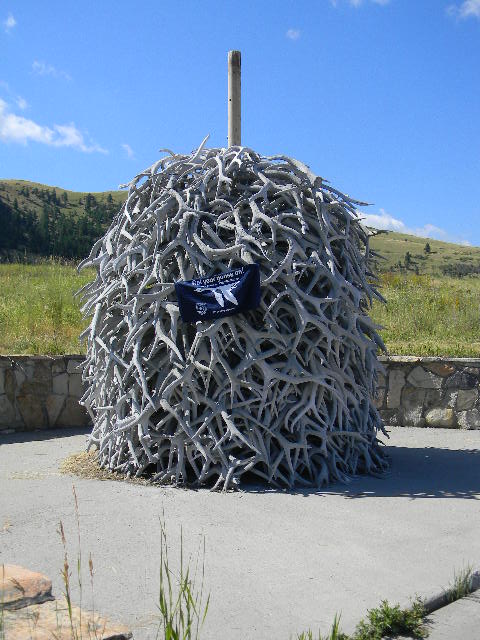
Get Your Goose On!

The GYGO rally towel finds a nice resting place among the elk antlers at National Bison Range NWR.